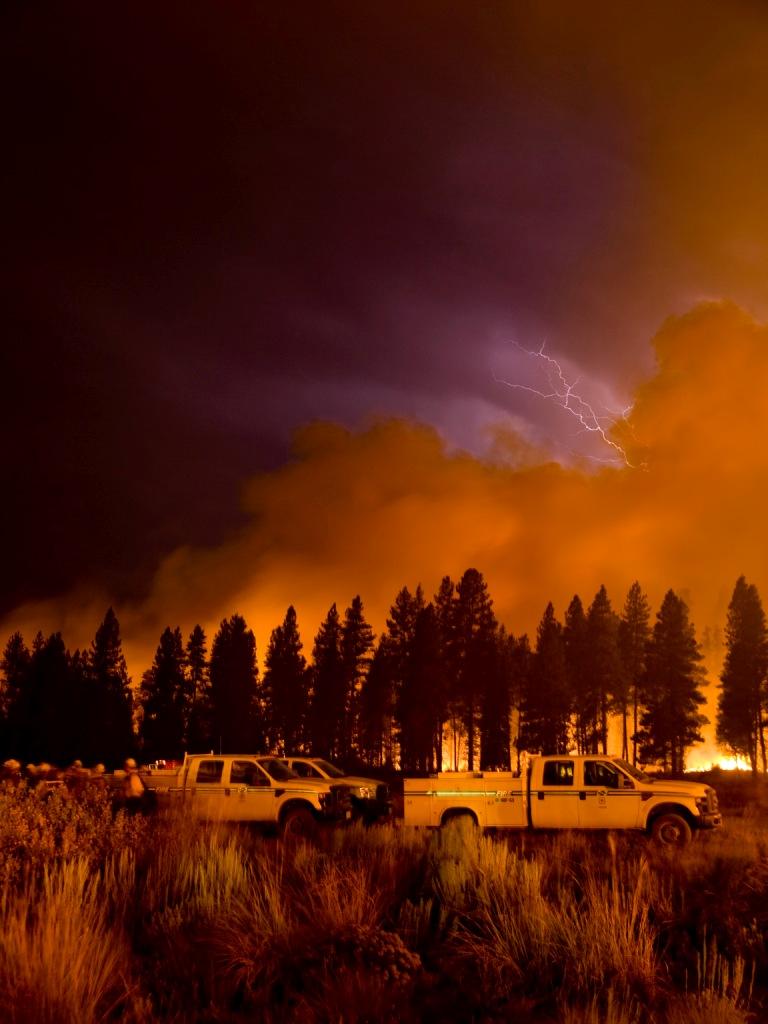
Lightning flashed across the night sky at the Little Queens Fire. The Little Queens Fire in Boise National Forest near Atlanta, ID began on Aug. 17, 2013 is under investigation. The fire has consumed approximately 20,956 acres and is 10% contained.